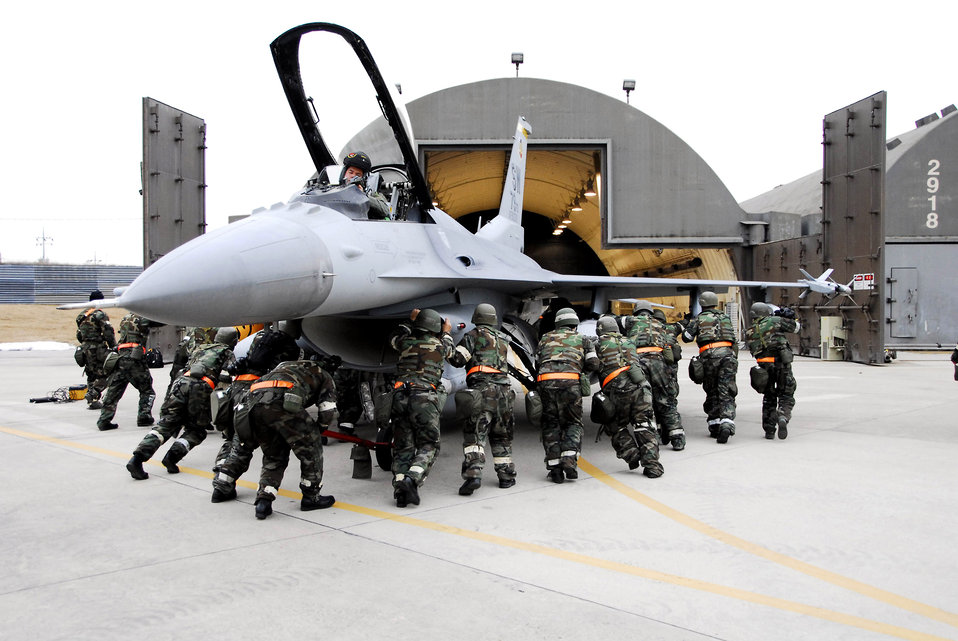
Falcon comes to nest in Kunsan

Airmen from the 79th Fighter Squadron push an F-16 Fighting Falcon into a hangar Jan. 15 at Kunsan Air Base, South Korea. More than 300 Airmen and several aircraft from the 79th Fighter Squadron from Shaw Air Force Base, S.C., are in South Korea as the squadron's air and space expeditionary force deployment to help maintain peace and stability in the Pacific region.